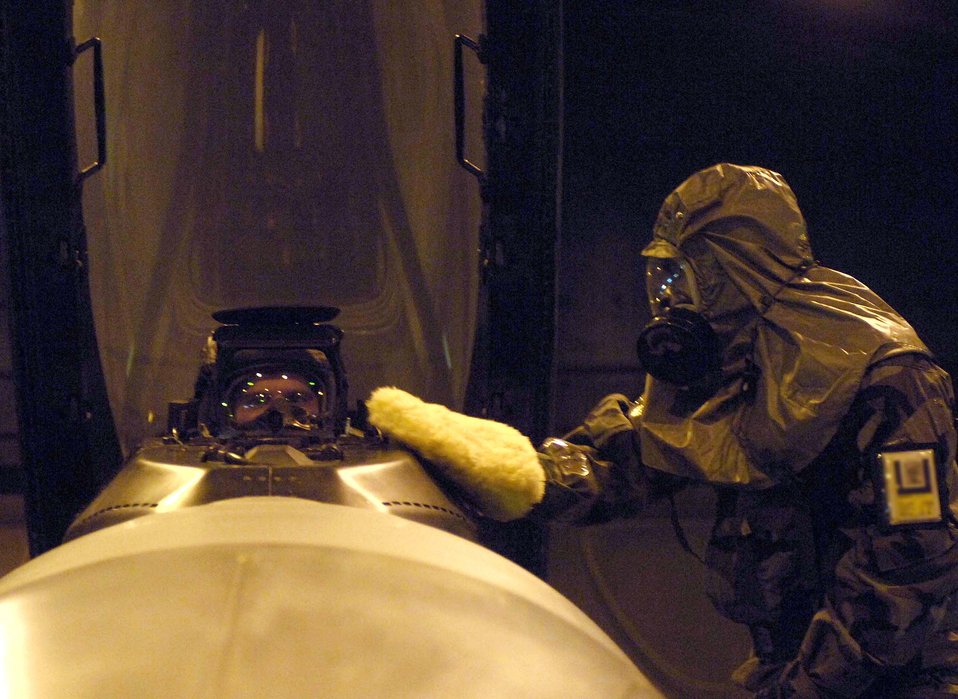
The search is on for bad chemicals

Staff Sgt Brandon Ward uses specially treated mitt March 6 to decontaminate an F-16 Fighting Falcon while the pilot, Capt Derrick Franck, waits to exit the aircraft during a NATO Tactical Evaluation at Aviano Air Base, Italy. The evaluation is to determine if Aviano's 31st Fighter Wing is prepared to support NATO Response Force 9/10.